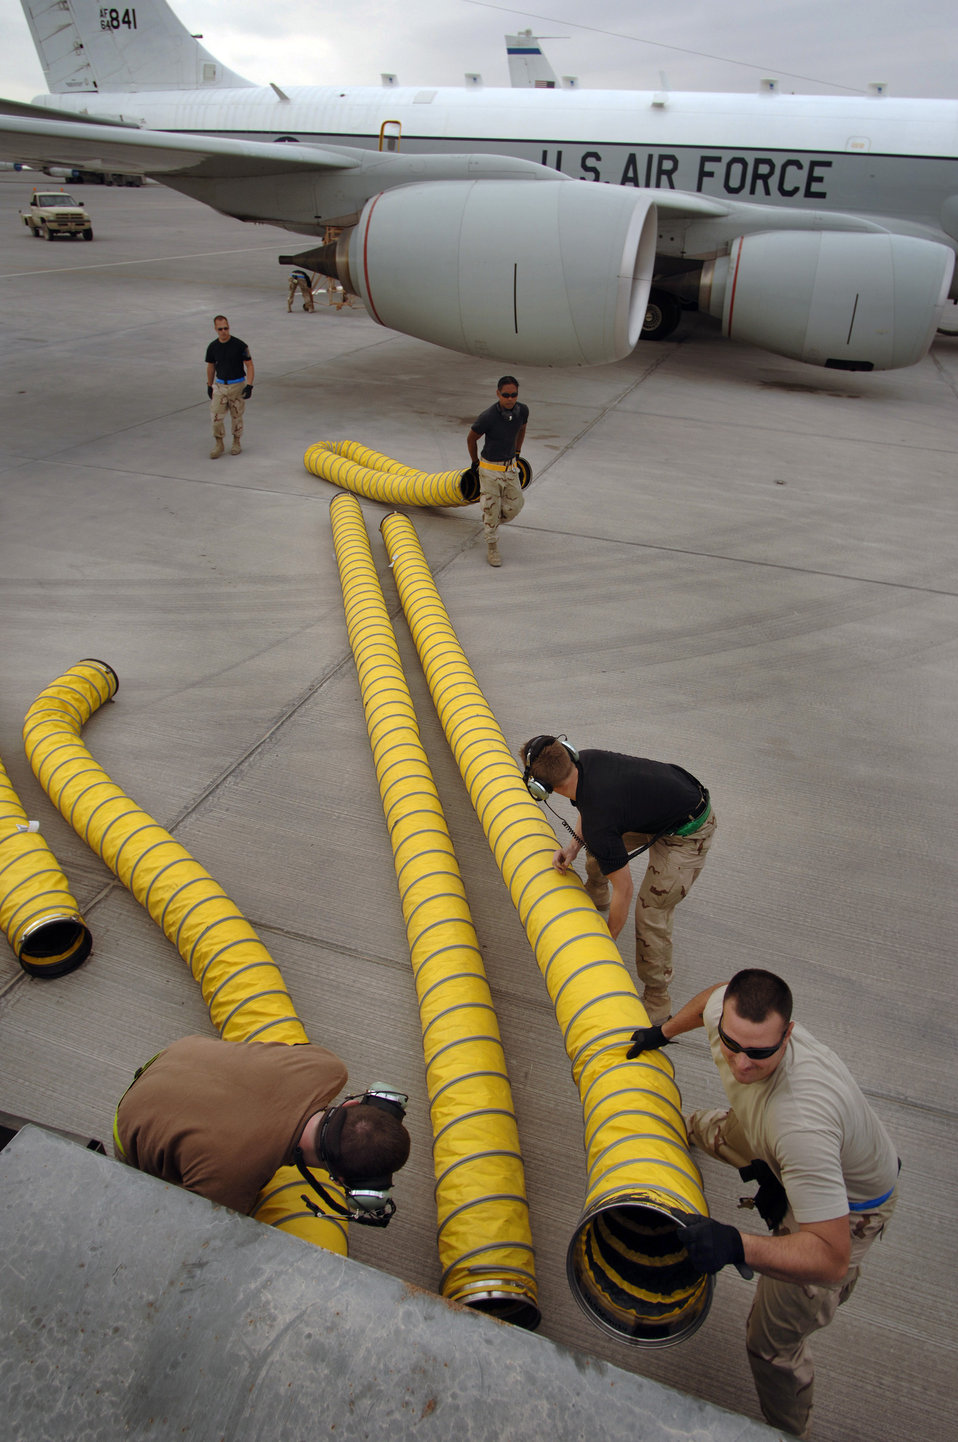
Maintainers turn Rivet Joint

After the removal of air conditioning hoses that were connected to an RC-135 Rivet Joint reconnaissance aircraft, Staff Sgt James Scott assists crew chiefs in stowing them away prior to the plane's departure for a mission over Southwest Asia. The hoses help maintain cool temperatures for the extensive inventory of electronics aboard the plane during its lengthy start up process. Sergeant Scott is a life support technician deployed from the 343rd Reconnaissance Squadron and the crew chiefs are from the 55th Aircraft Maintenance Squadron from Offutt Air Force Base, Neb.